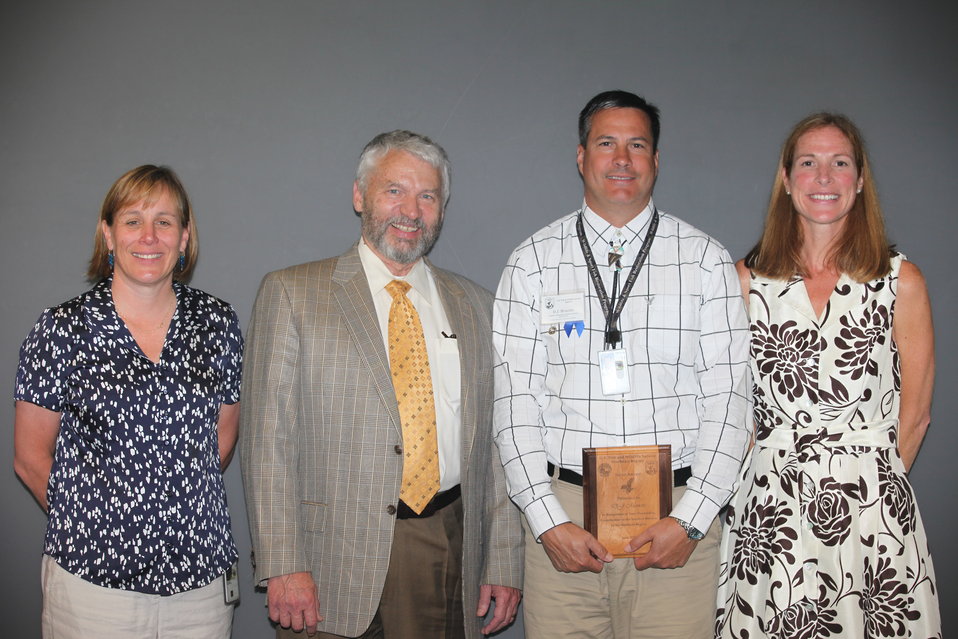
D.J. Monette, of the Regional Office- External Affairs, recieved an Eagle Award.
From left to right: Deputy Regional Director Deb Rocque, Deputy Director Rowan Gould, D.J. Monette, and Regional Director Wendi Weber